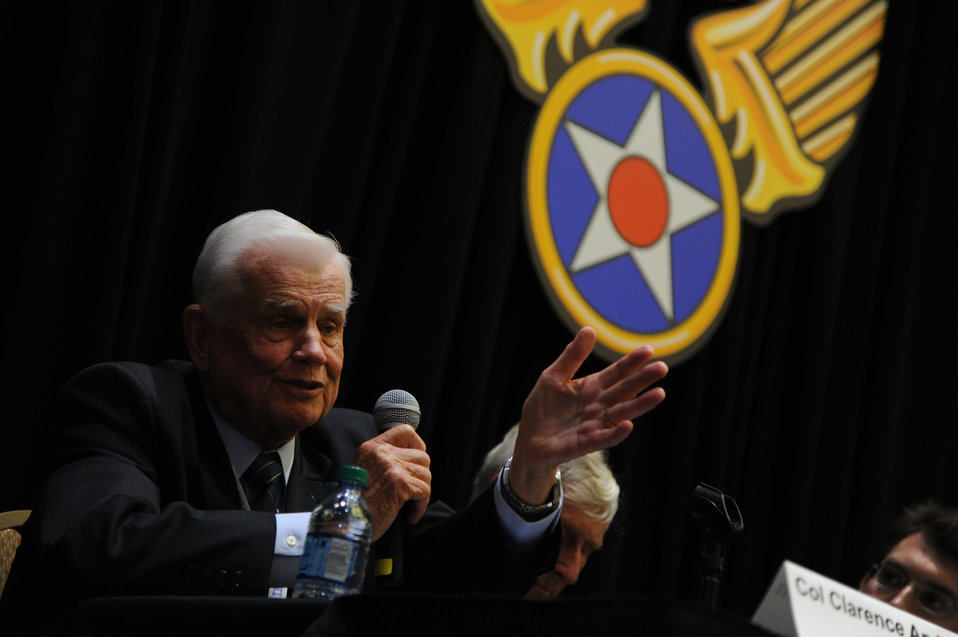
Retired Col. Clarence Anderson recalls various memories of flying during
World War II during the Air Force Association Air and Space Conference and Technical Exposition on Sept. 17, 2012, in Washington. Anderson's anecdote was just one of many
shared on the panel as the former fighter pilots spoke about the issues they
faced as part of the Army Air Corps during that era.